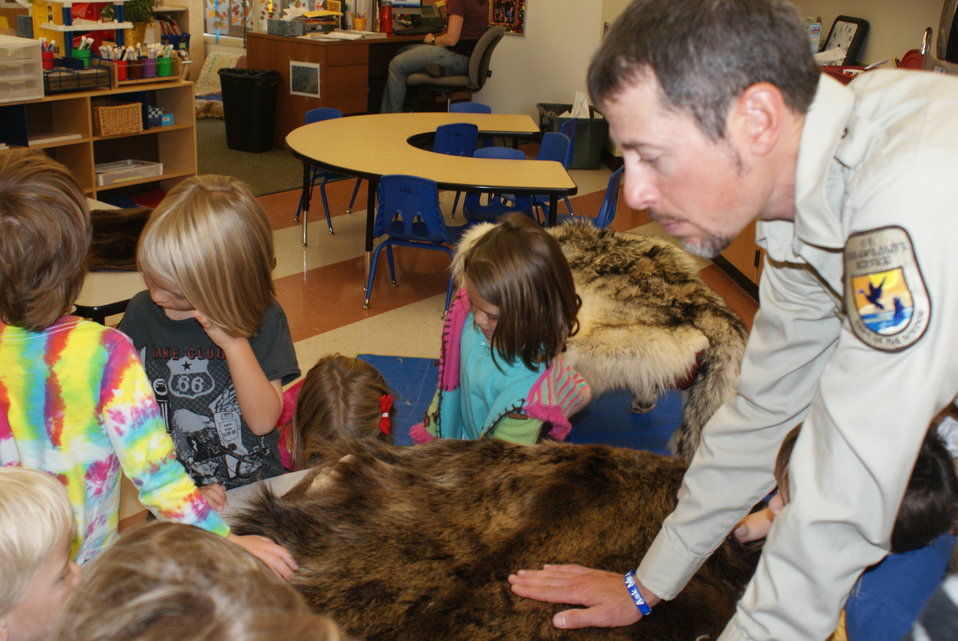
Scientists in the Community Program

U.S. Fish and Wildlife Service Mountain-Prairie Region Deputy ARD for External Affairs, Matt Kales, introduces early childhood education students at William Roberts Elementary School in Denver to some of Colorado's native and historic wildlife species.